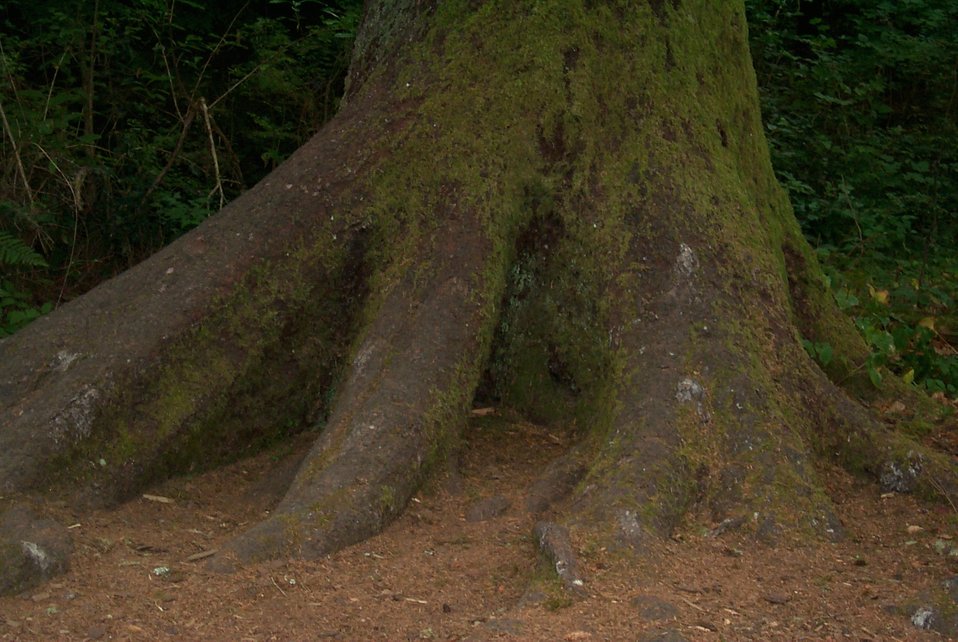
Jurassic Park? Nope - just a moss-covered tree trunk.